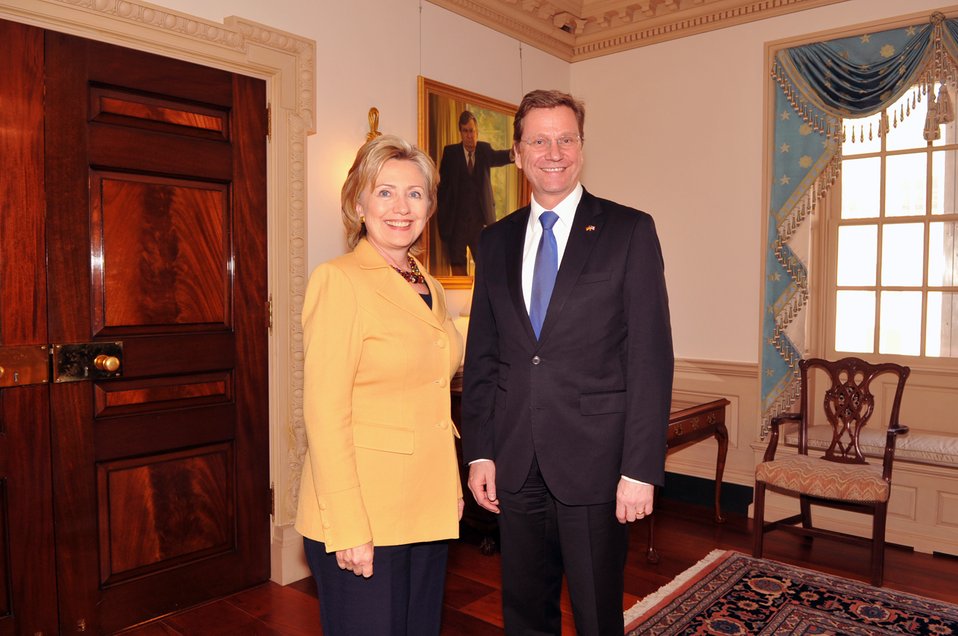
Secretary Clinton Poses for a Photo With German Foreign Minister Westerwelle

U.S. Secretary of State Hillary Rodham Clinton poses for a photo with German Foreign Minister Guido Westerwelle at the U.S. Department of State in Washington, D.C., on September 29, 2010.